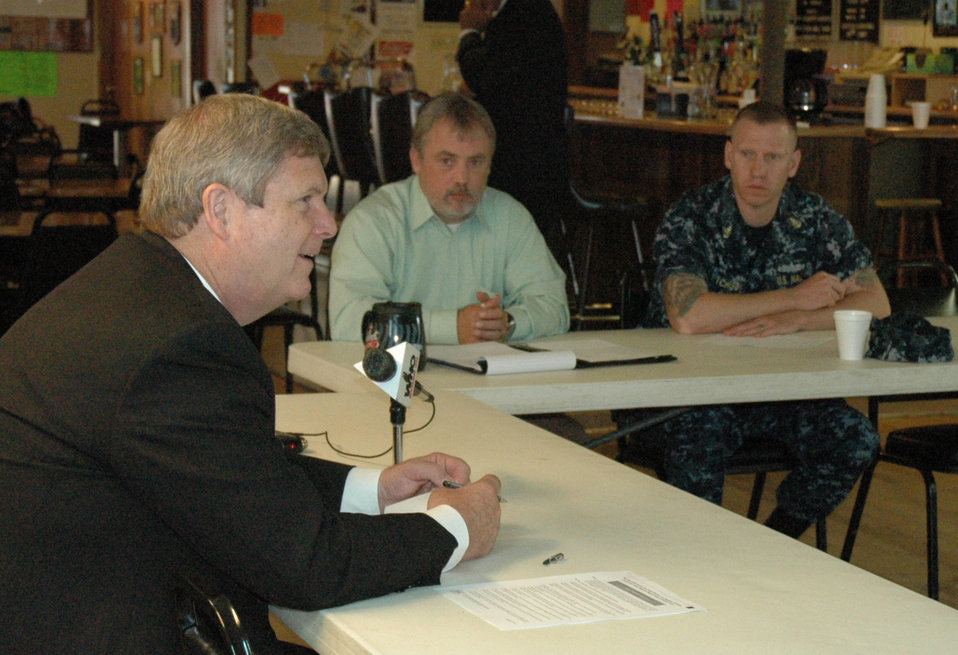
Agriculture Secretary Tom Vilsack meets with local veterans organizations in Des Moines, Iowa, on Friday, May 25, 2012 to discuss how the U.S. Department of Agriculture programs are helping provide economic opportunities for veterans. Secretary Vilsack also talked about the proposed Veterans Jobs Corps that will help employ returning service members. The Veterans Job Corps will put up to 20,000 veterans to work over the next five years on projects to preserve and restore national parks and other federal, state and local lands.